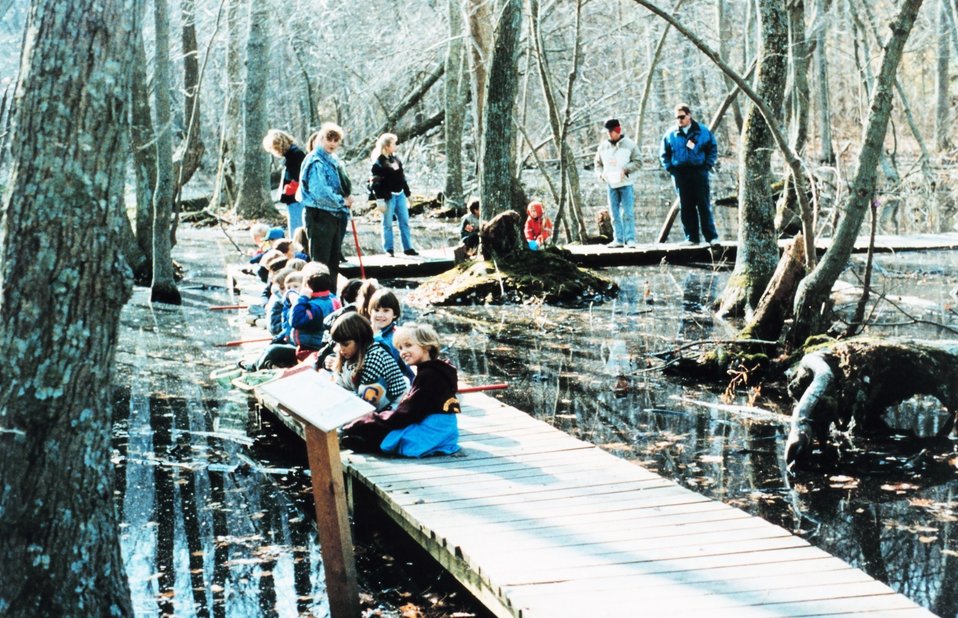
An elementary school outing at Flag Pond Marsh, a wetlands nature park.